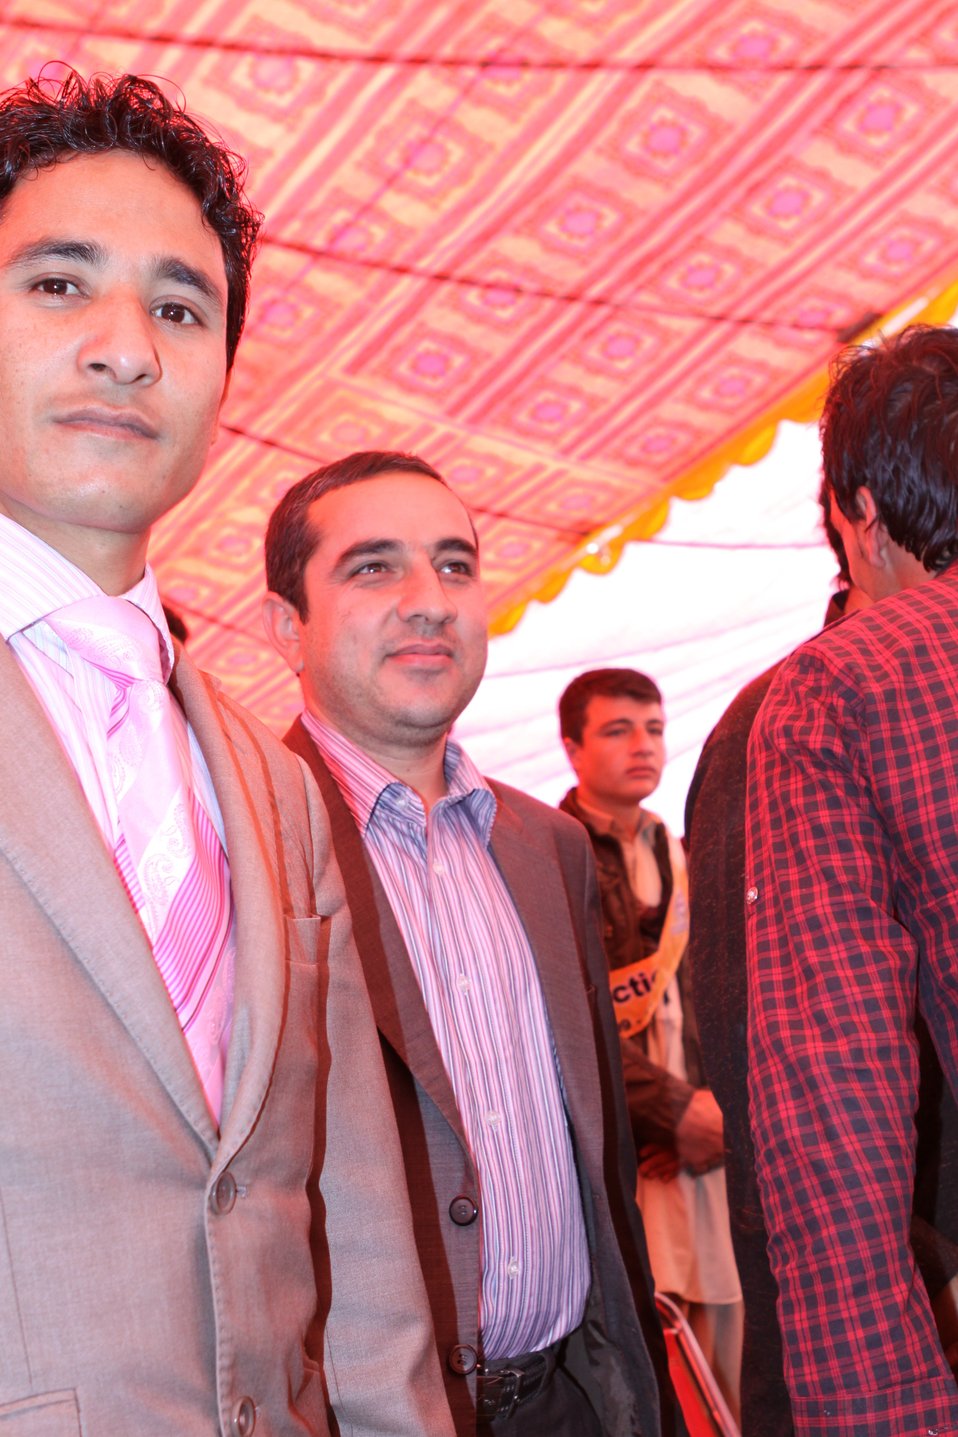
100522 ATVI Graduation 055